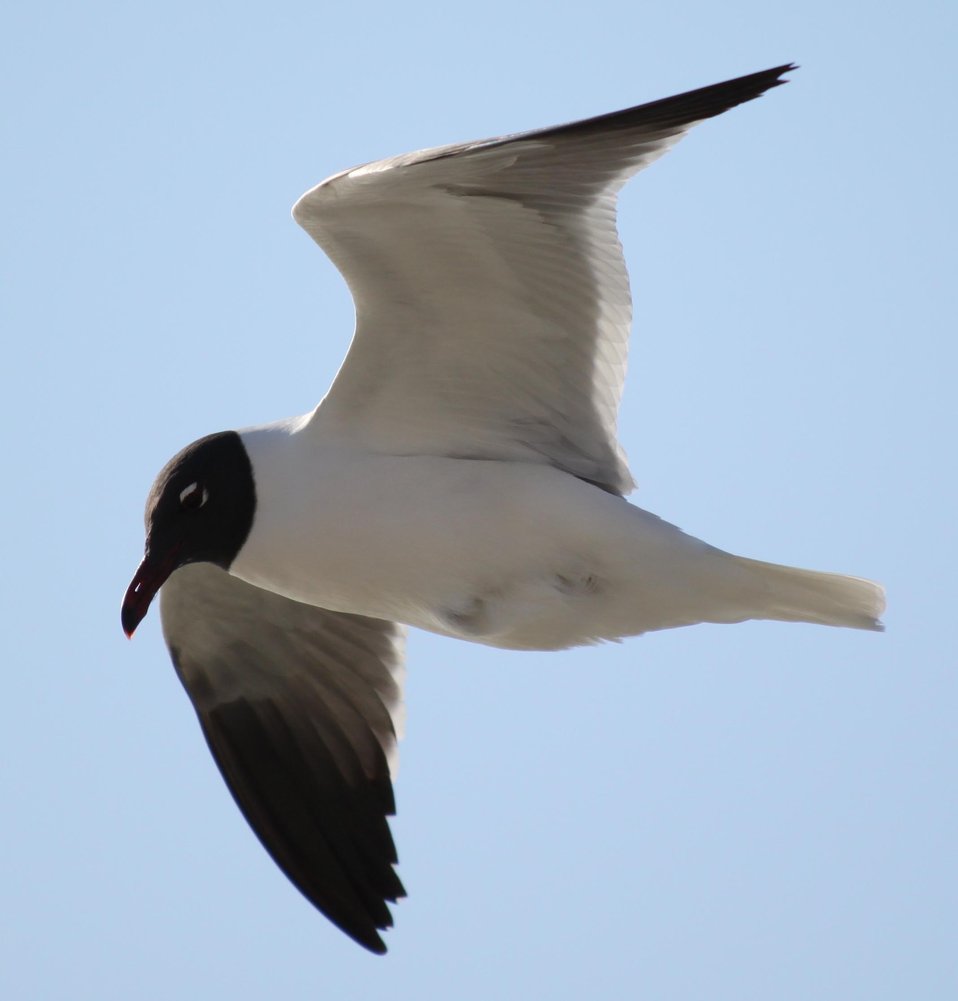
Laughing gull in flight